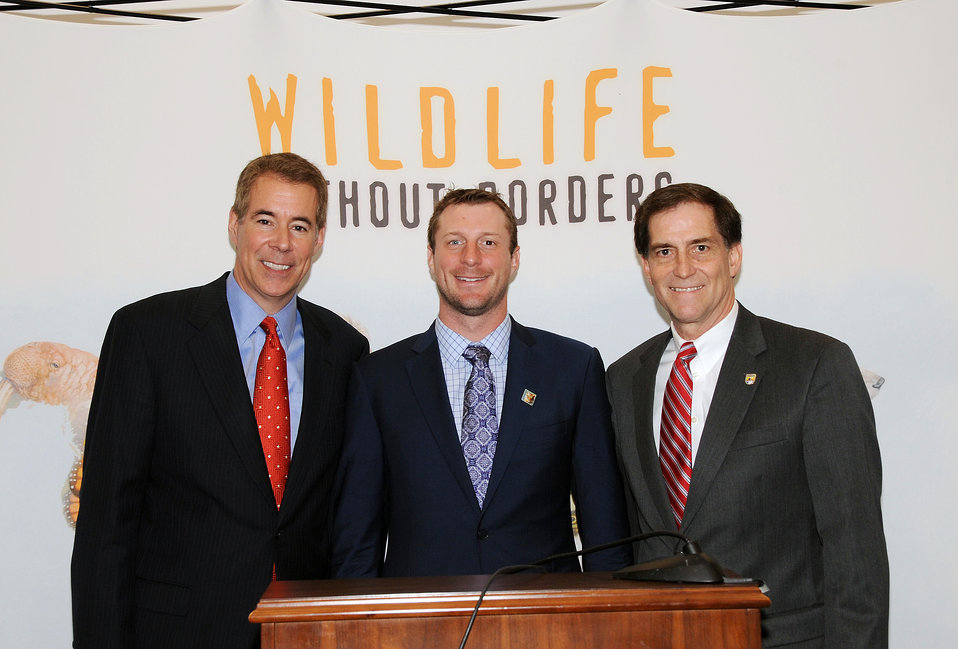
Save Vanishing Species on Capitol Hill

Dave Lestrang, Max Scherer, Dan Ashe